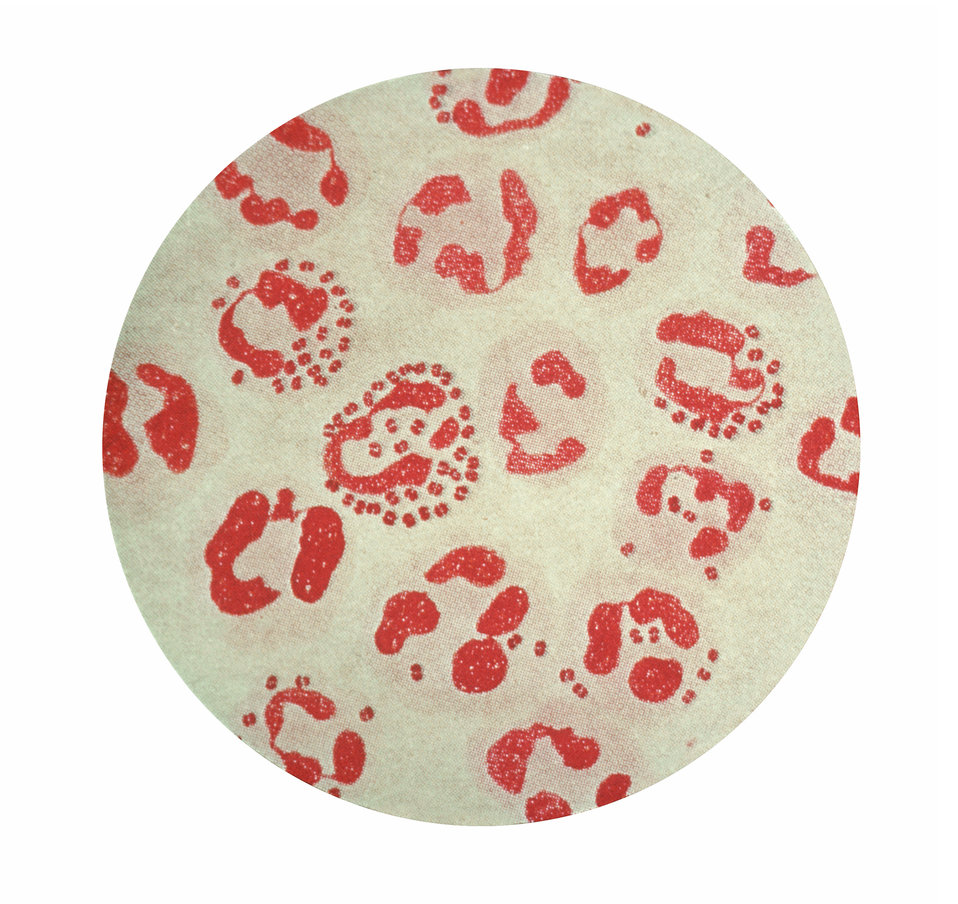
A photomicrograph of Neisseria gonorrhoeae viewed using a Gram-stain technique.